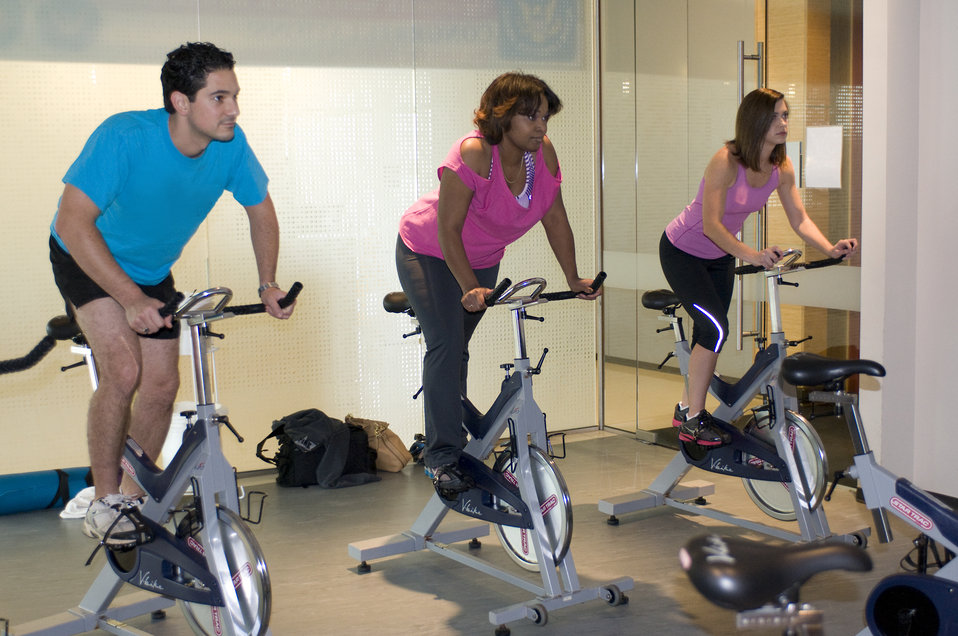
This image depicts a class in session, the purpose of which was to instruct a number of Centers for Disease Control (CDC) employees through an aerobic spinning session, consisting of attendees following the participatory commands of an instructor on whom they were focus to the right, though unseen here in this photograph.